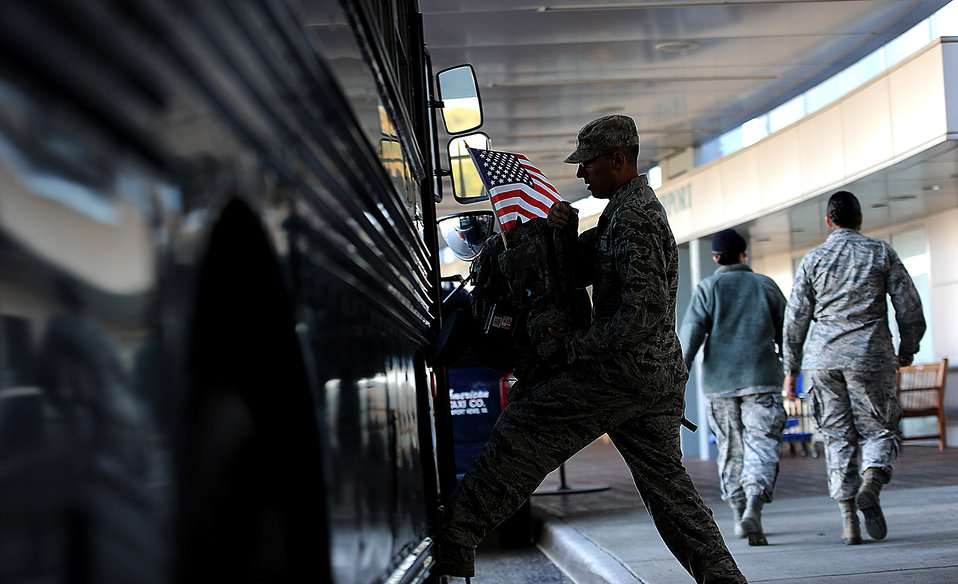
Langley SFS welcomes home deployed defenders

Airman Basic Joseph Wesley, from the 633rd Security Forces Squadron out of Joint Base Langley-Eustis, Va., gets on a bus after being greeted at the Newport News, Va., airport by family and coworkers Nov. 2, 2011. He was among about 20 633rd SFS members who returned to JB Langley from deployment with the 332nd Expeditionary Security Forces Squadron at Joint Base Balad in the past week.